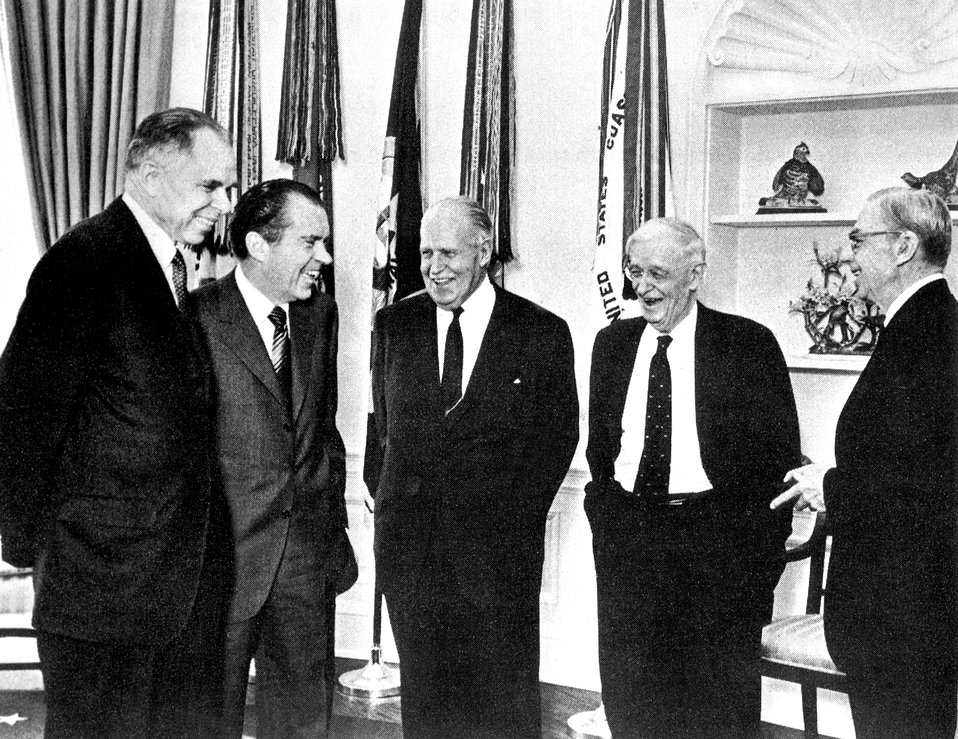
The Atomic Pioneer Awards ceremony at the White House with Glenn T. Seaborg, President Richard Nixon, General Leslie R. Groves, Vannevar Bush and James B. Conant.